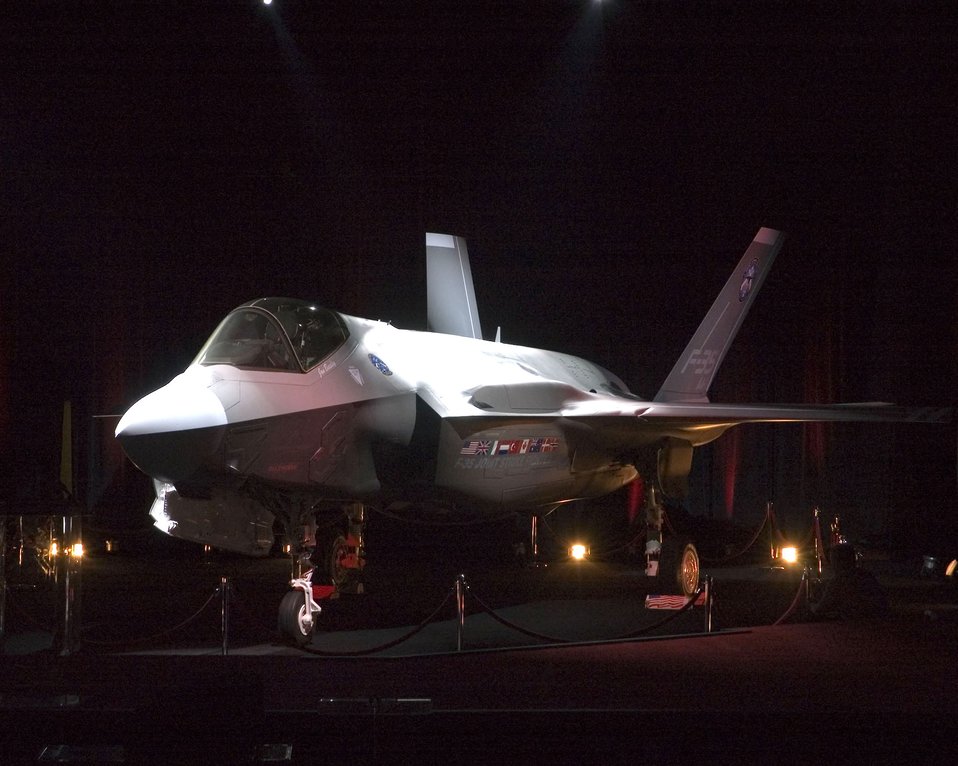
Lightning II makes its debut

The Lockheed Martin F-35 Lightning II is presented for the first time at an inauguration ceremony the the Lockheed Martin plant in Fort Worth, Texas, on July 7. The Lightning II is a 5th-generation, supersonic stealth fighter designed to replace a wide range of existing aircraft, including the AV-8B Harrier, A-10 Thunderbolt II, F-16 Fighting Falcon, F/A-18 Hornet and Royal Air Force Harrier GR-7 and Sea Harriers.